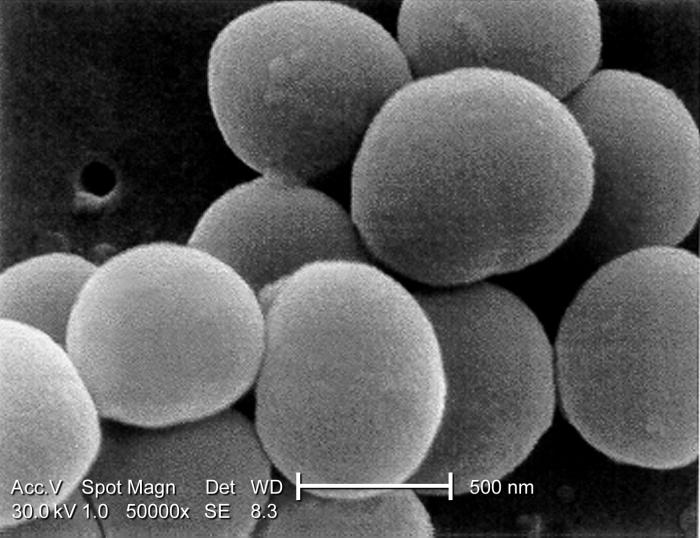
Under a very high magnification of 50,000x, this scanning electron micrograph (SEM) shows a strain of Staphylococcus aureus bacteria taken from a vancomycin intermediate resistant culture (VISA).